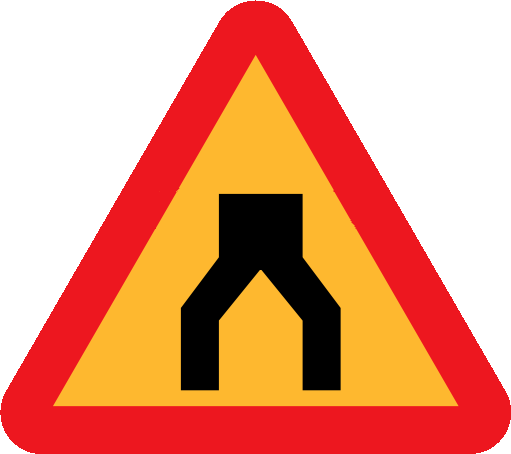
1 1 3 1a